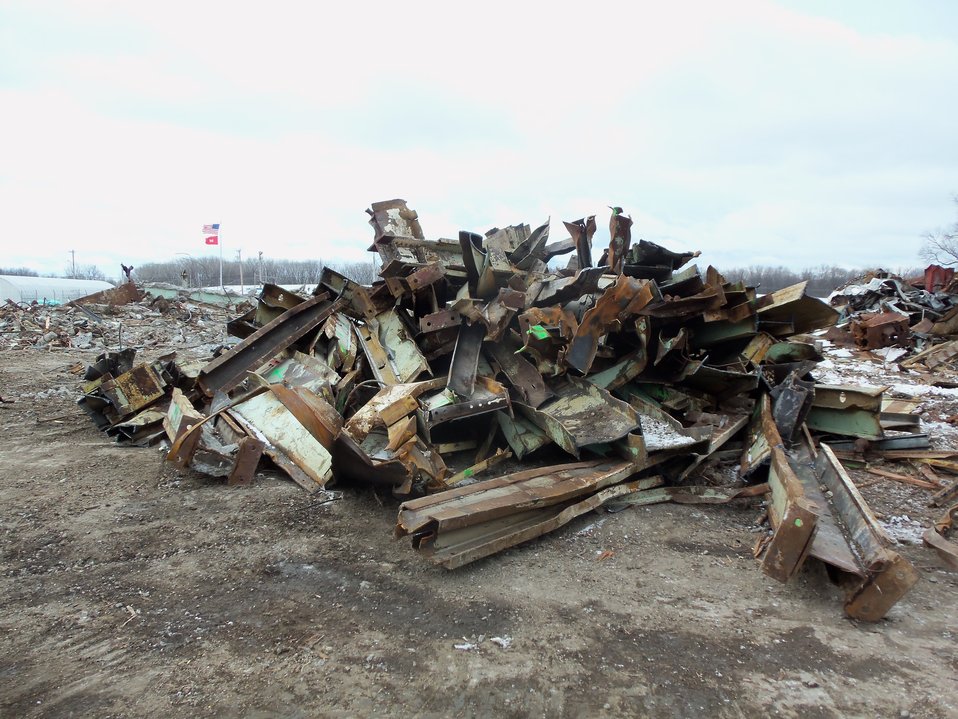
Building 401 steel debris.

Activities from the Niagara Falls Storage Site, which is associated with the former Lake Ontario Ordnance Works. Formerly Utilized Sites Remedial Action Program (FUSRAP), a program initiated in 1974 to identify, investigate and clean up or control sites that were part of the Nation's early atomic energy and weapons program. Activities at the sites that are eligible for FUSRAP were conducted by Manhattan Engineer District (MED) or the Atomic Energy Commission (AEC), both predecessors of the Department of Energy (DOE). The U.S. Army Corps of Engineers was assigned management of FUSRAP by Congress in 1997.